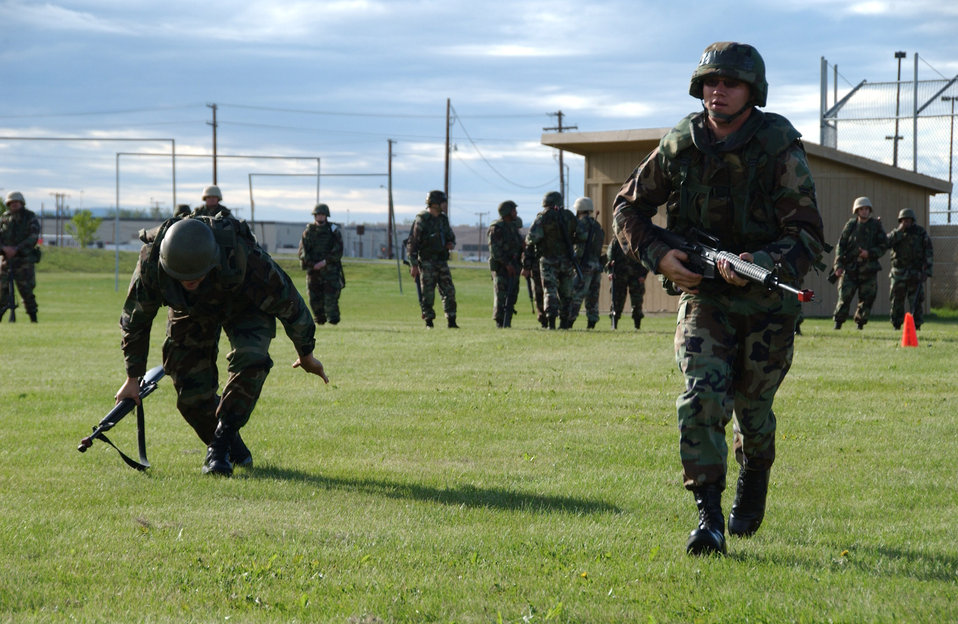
Air warriors train for deployment

Airmen demonstrate a technique called